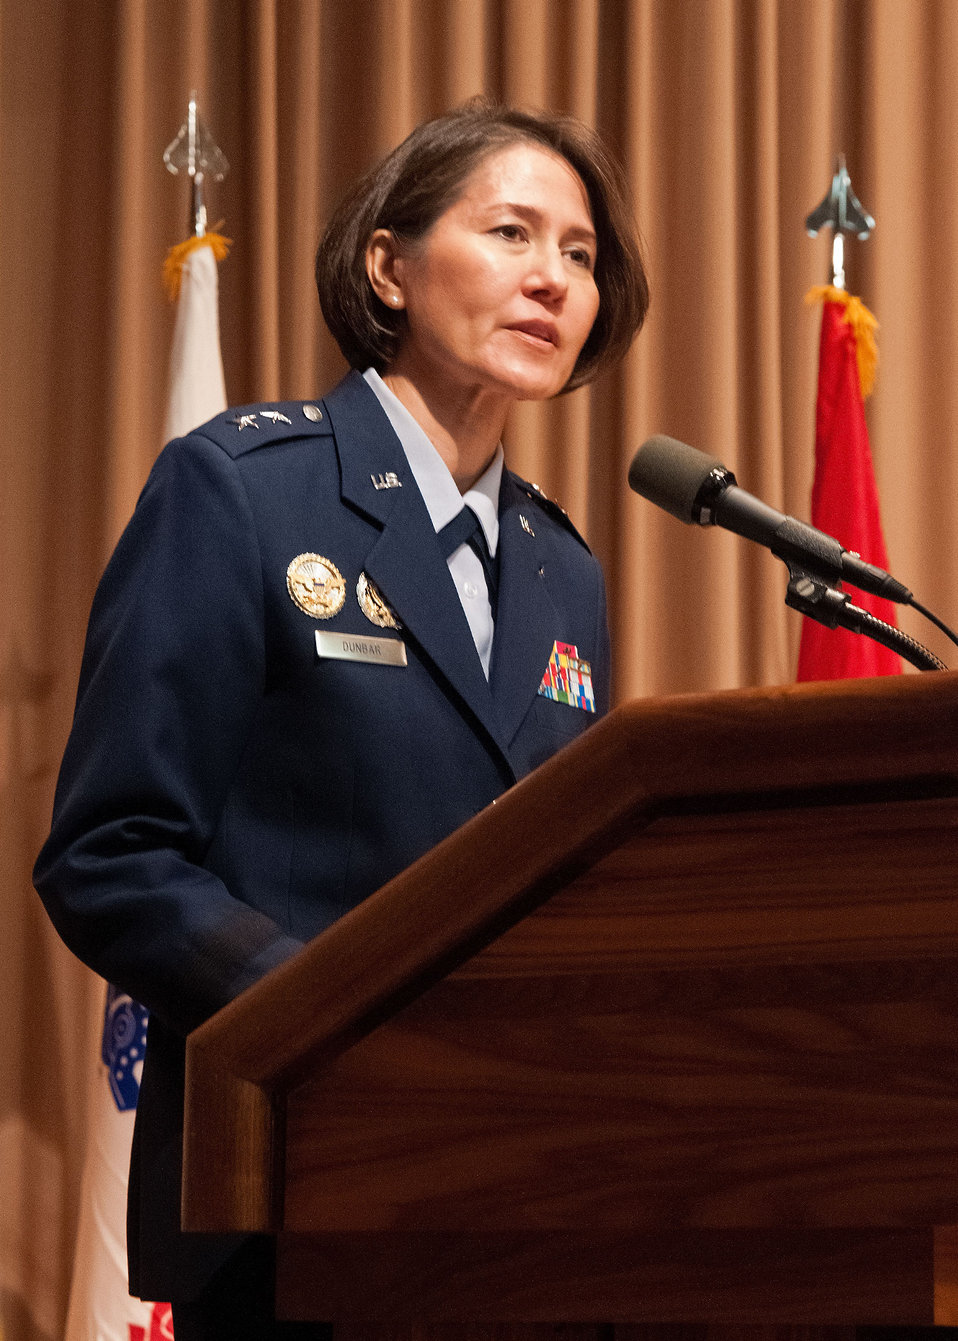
U.S. Air Force Major General Commander, Air Force District of Washington, Joint Base Andrews, MD Sharon K.G. Dunbar speaks at the U.S. Department of Agriculture's Veterans Day Observance: Honoring All Who Served, in Washington, D.C. on Wednesday, Nov. 7, 2012. The Air Force District of Washington is the Air Force voice and component to the Joint Forces Headquarters-National Capital Region.